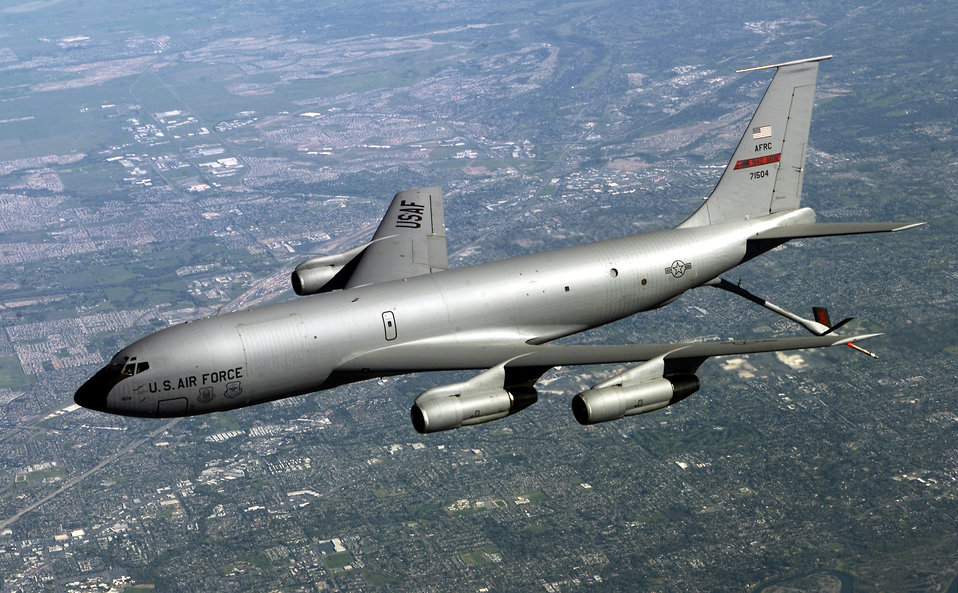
Noble Eagle

OVER THE SAN FRANCISCO BAY AREA -- A KC-135E Stratotanker, flown by Maj. Paul Sheehan, aircraft commander, Capt. John Wahleithner, co-pilot, and Maj. Rob Mazzie, navigator during a Operation Noble Eagle training patrol March 16. The three airmen are from the 940th Aerial Refueling Wing at Beale Air Force Base, Calif.